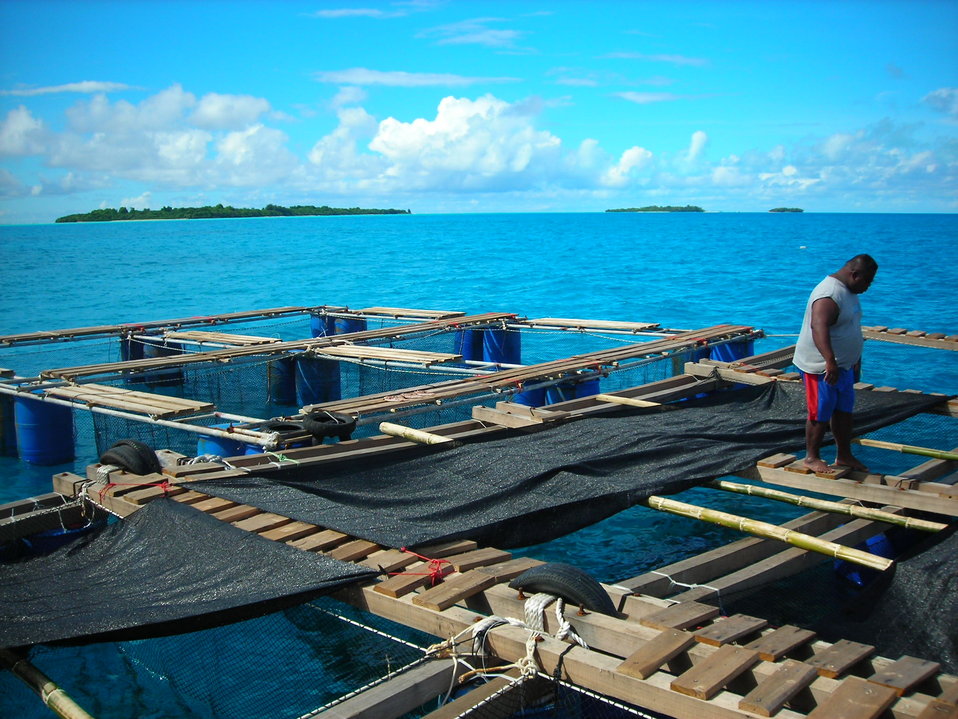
Uploaded by request of Peter Buekea

Taken in Kayangel, Palau, Micronesia

'Gone Fishin'' - Oceanic fish pens.